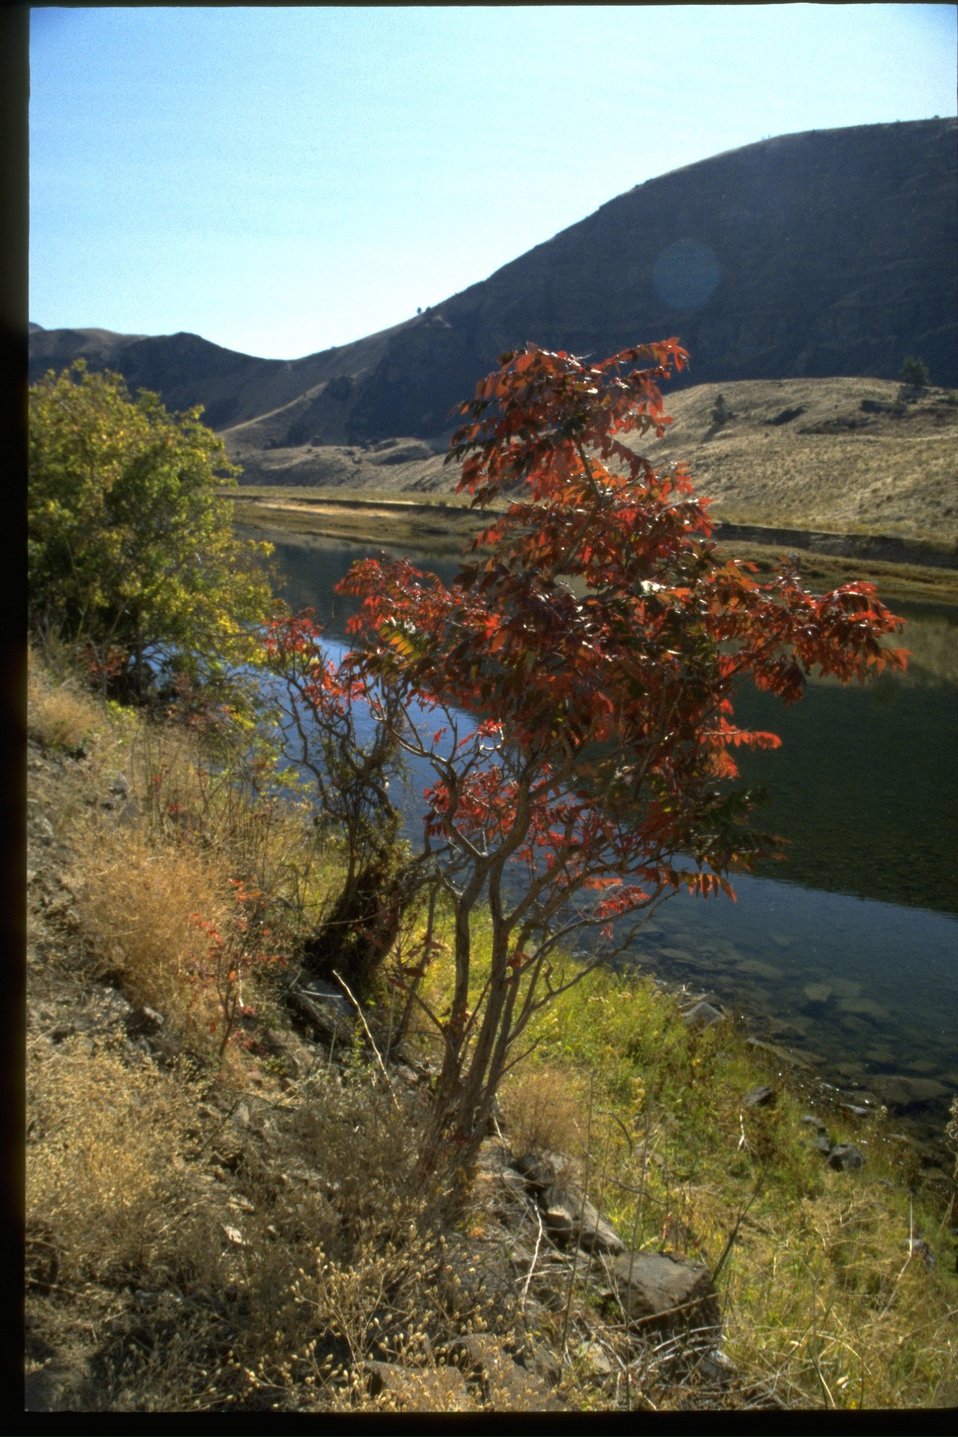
Sumac and riparian vegetation along the John Day River.